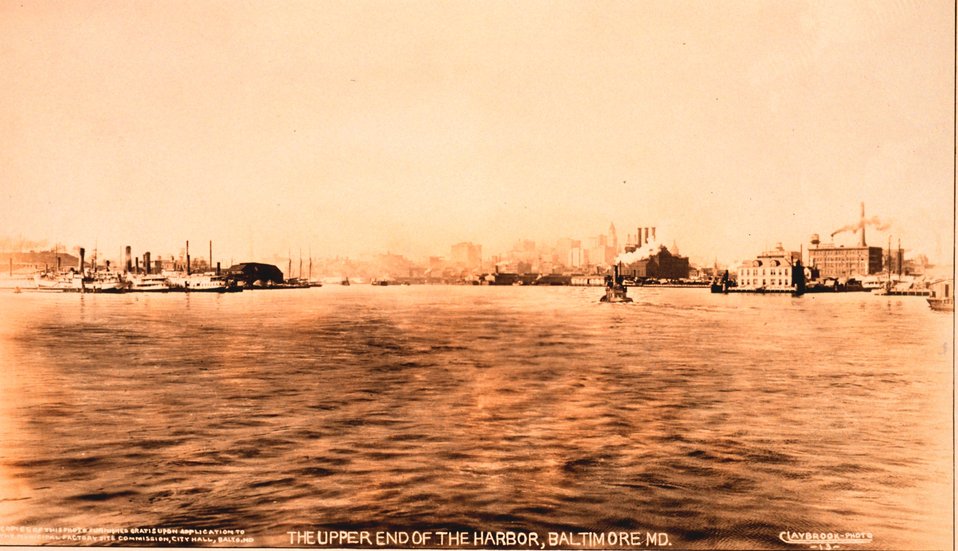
The upper end of Baltimore Harbor. Accompanied as loose photos in the 'Monthly Journal of the Engineers' Club of Baltimore' for February 1914.